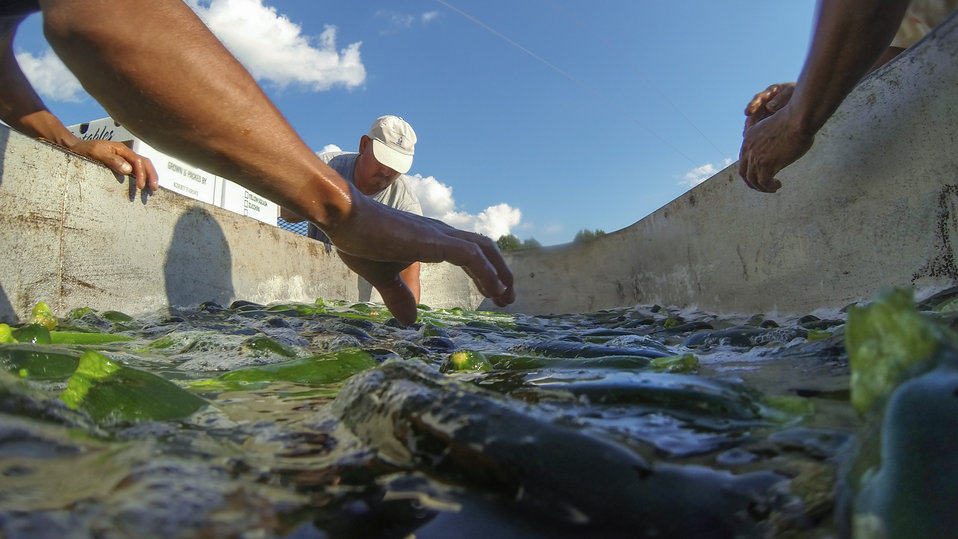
Migrant workers rinse and pack just-picked yellow squash on a processing trailer, at Kirby Farms in Mechanicsville, VA on Friday, Sept. 20, 2013. Kirby Farms devotes 200 acres of the farm to eggplant, spinach, beets, tomato, jalapeno peppers, melons and a variety of greens. Soybeans and small grain are grown on the remaining 300 acres. The fertile Virginia soil and their management practices, allows Kirby Farms to double and triple crop fields with rotational crop selection. Wholesalers, who buy from this farm, sell the produce to major supermarkets in the Mid-Atlantic region, from North Carolina to Maryland. Restaurants in the local area prepare and serve their harvest to patrons in the Greater Richmond, VA Region.